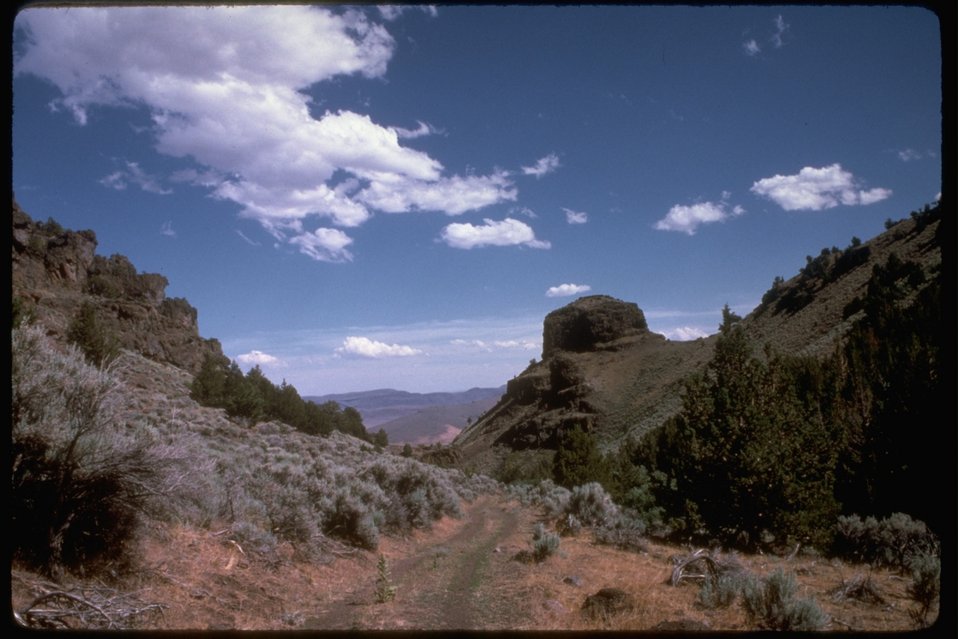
Lower and Mid Stonehouse Canyon. OR 2-23